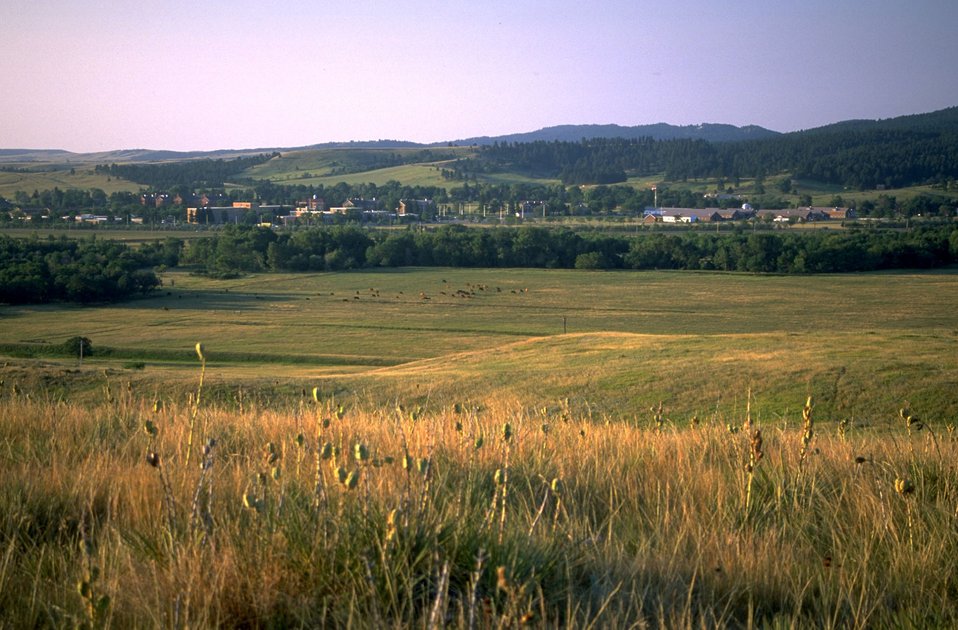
Bear Butte Creek and Veterans Admnistration Complex at Fort Meade